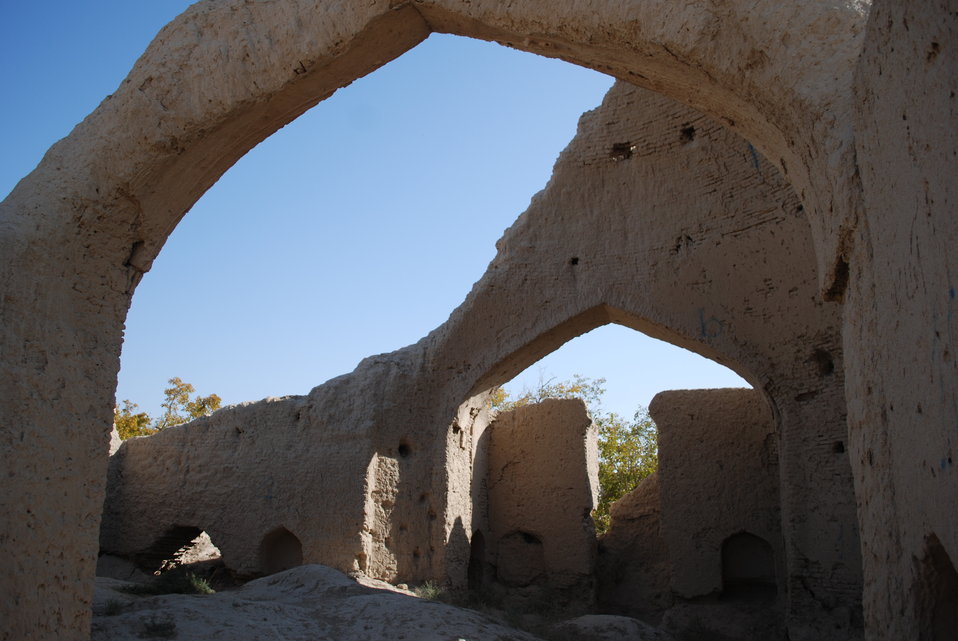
'On the Road' in Balkh Province